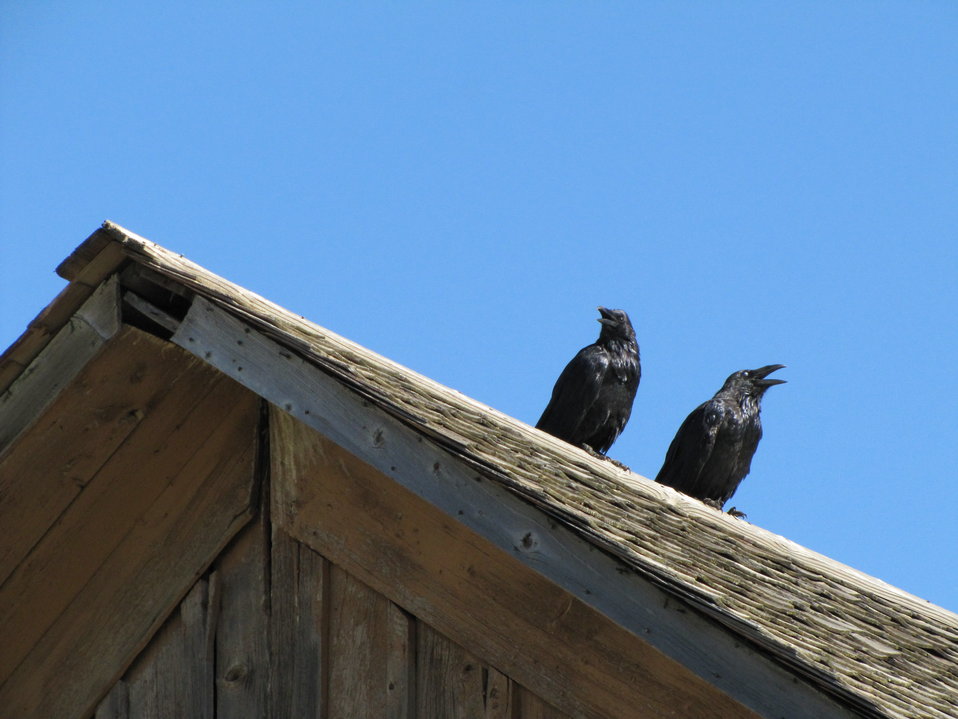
Ravens on a Rooftop

Two ravens vocalize from the roof of the barn on the National Elk Refuge's historic Miller Ranch in Wyoming.